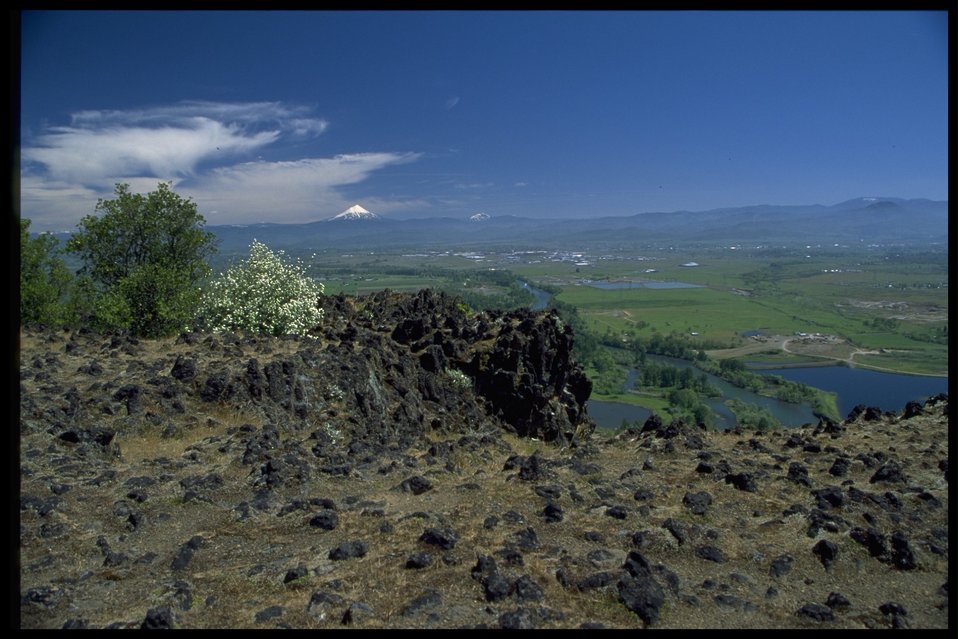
Farshot of service berry, Amelanchier alnifolia.